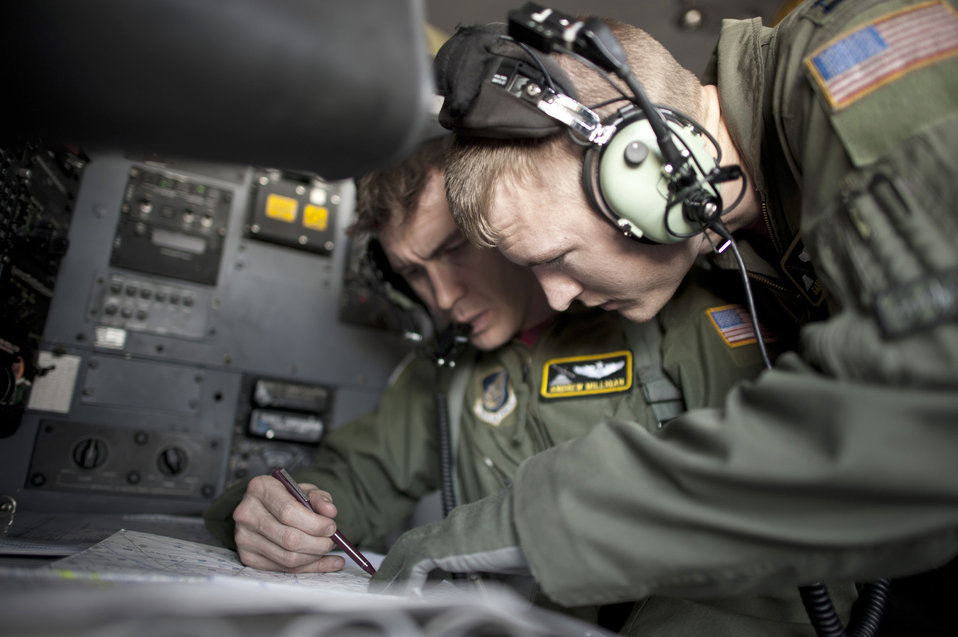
Monitoring ocean currents

Capt. Gabe Frusha looks over a map with Capt. Andrew Milligan aboard a C-130 Hercules April 29, 2011, above the Pacific Ocean. Captain Frusha is a pilot and Captain Milligan is a navigator. Both are assigned to the 36th Airlift Squadron at Yokota Air Base, Japan.